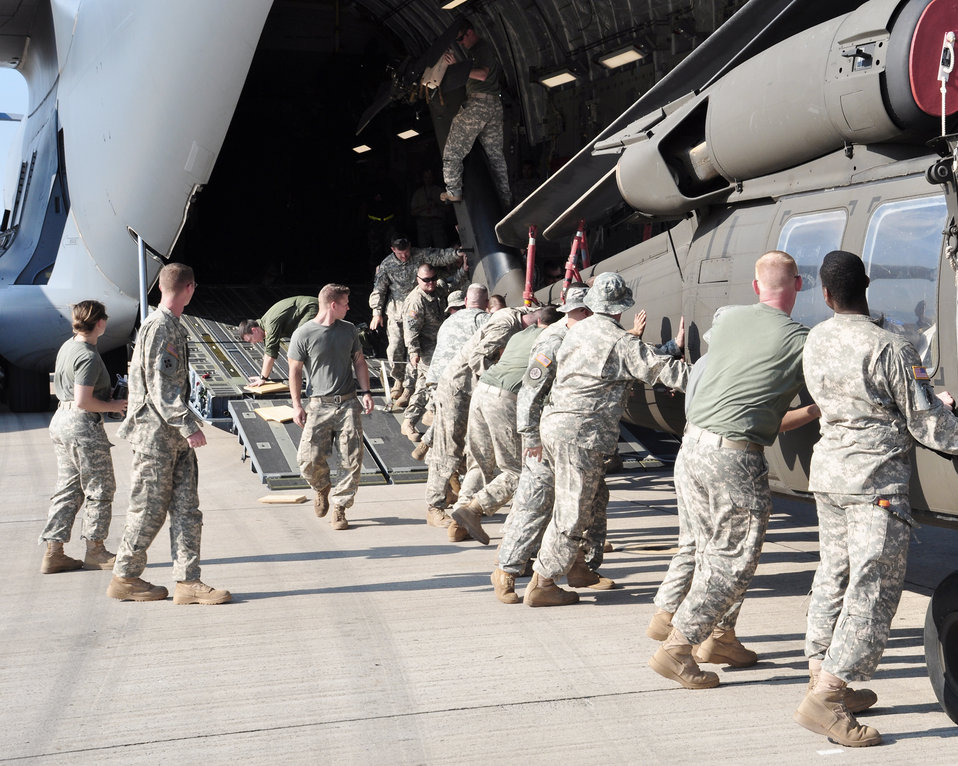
American servicemembers, helicopters deploy to Haiti

Joint Task Force-Bravo members keep a UH-60 Blackhawk straight while loading it onto a C-17 Globemaster III March 20, 2010, at Soto Cano Air Base, Honduras. Soto Cano AB officials sent 40 servicemembers and four UH-60 Blackhawks to support Joint Task Force-Haiti airlift operations as part of the disaster relief mission Operation Unified Response.